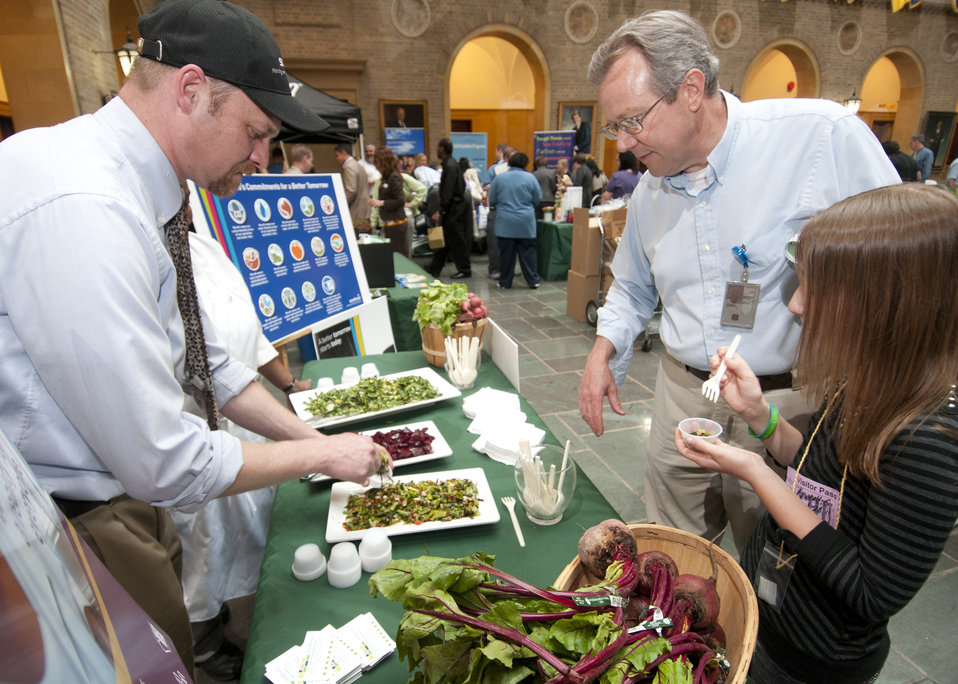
The U. S. Department of Agriculture (USDA) held its annual “Take Your Child to Work Day” on the patio of the Whitten Building, in Washington, DC, on Thursday, April 28, 2011. The program is designed to introduce young people to USDA’s wide range of responsibilities and services. Matthew Galo (left) prepares a food sample for Grace Kendall (right) and her father Chris Kendal (second from right) at the Chef’s Kitchen People’s Garden exhibit at Agriculture’s “Take Your Child to Work Day” event.